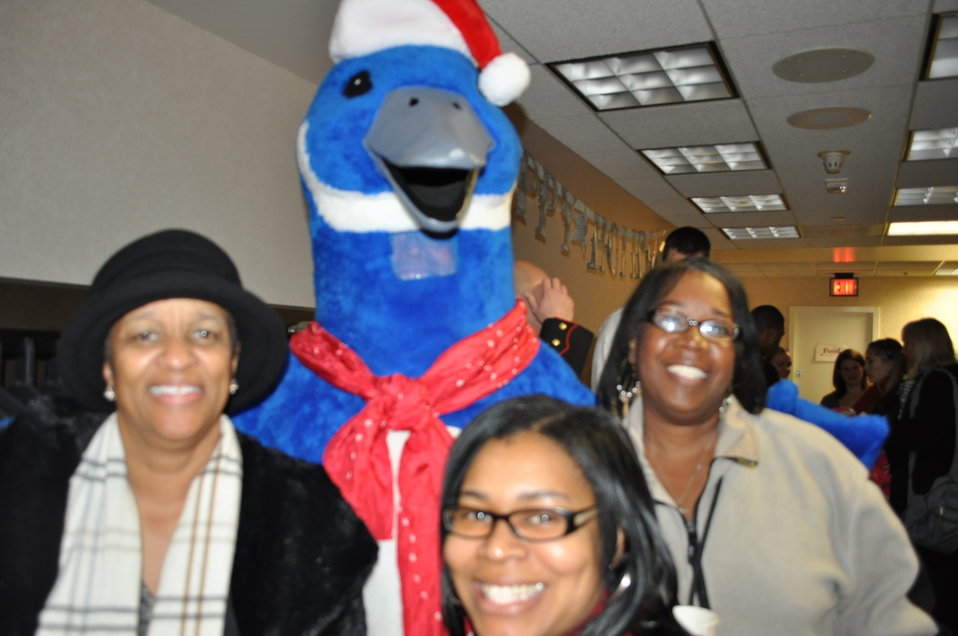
Puddles and friends

Puddles' look gets even more festive.